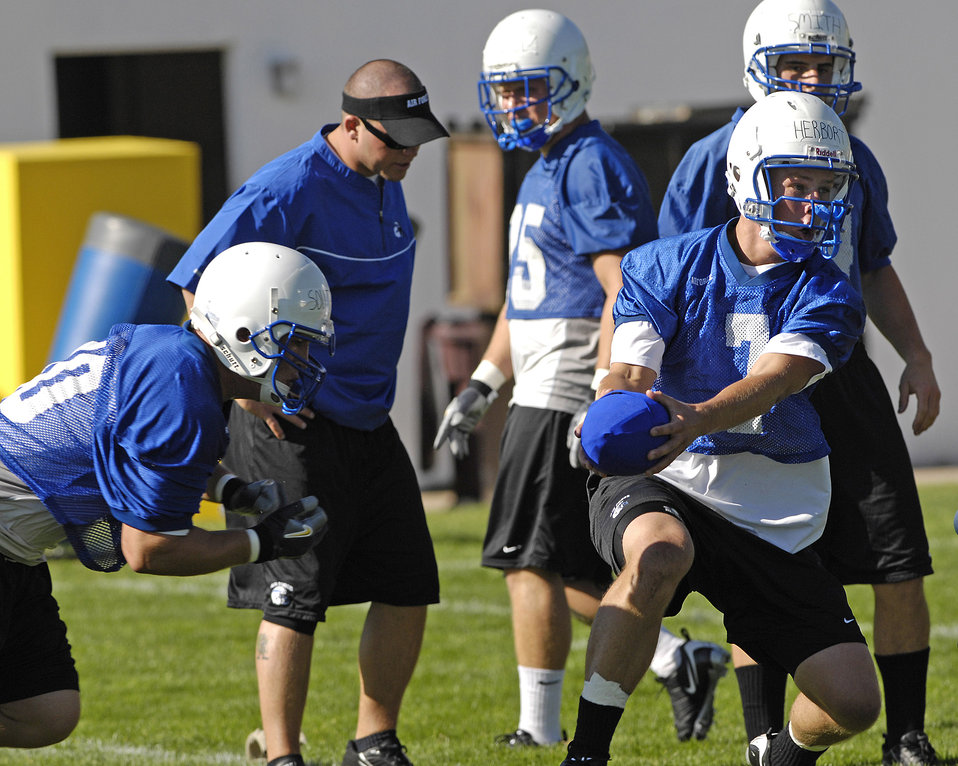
First day of football practice at the Academy

Quarterback Cadet 2nd Class Eric Herbort practices handoffs with fullback Cadet 3rd Class Ryan Southworth as the Falcons practice in preseason camp July 31 at the U.S. Air Force Academy in Colorado.